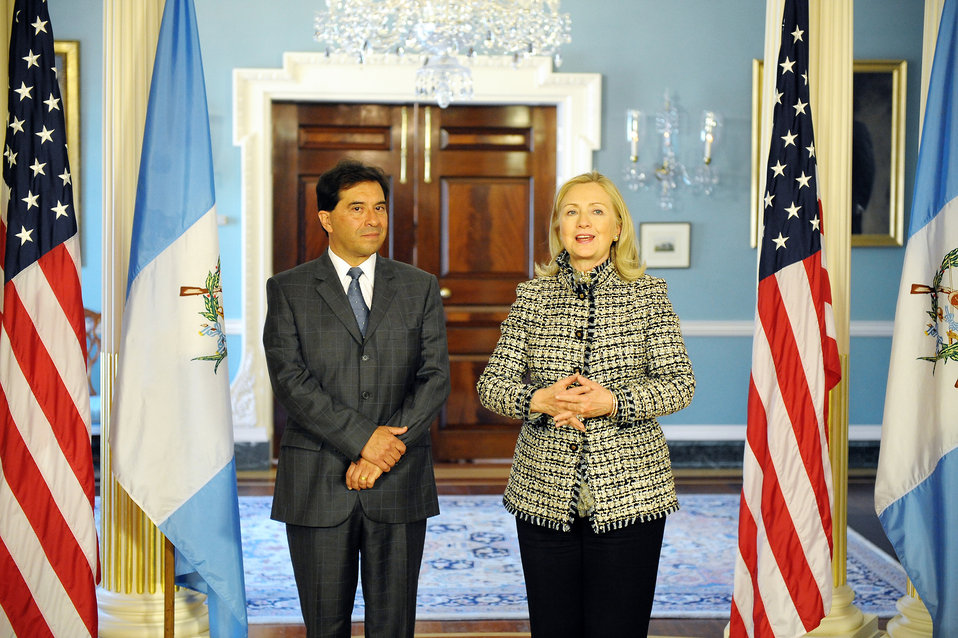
Secretary Clinton Meets With Guatemalan Foreign Minister Foreign Minister Caballeros

U.S. Secretary of State Hillary Rodham Clinton meets with Guatemalan Foreign Minister Harold Caballeros at the U.S. Department of State in Washington, D.C., on February 21, 2012.